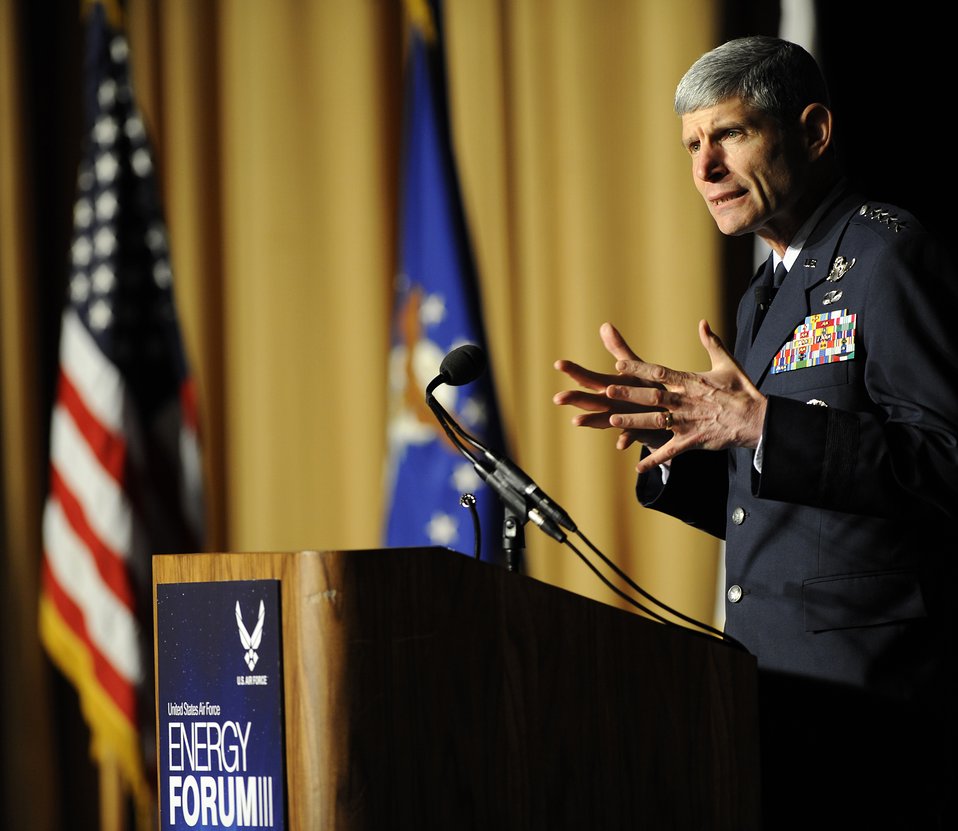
Air Force chief of staff encourages Airmen to embrace energy efficiency

Air Force Chief of Staff Gen. Norton Schwartz talks at the U.S. Air Force Energy Forum May 28, 2010, in Washington, D.C. General Schwartz urged the integration of energy efficiency and conservation into all aspects of the service's mission.